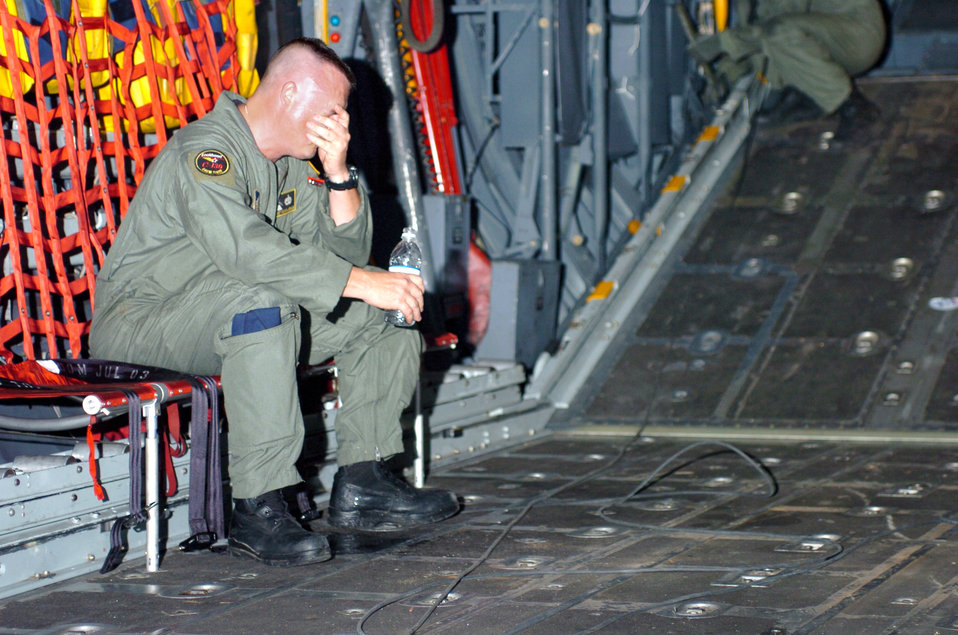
Deployed Airmen support Operation Unified Assistance

LANGKAWI, Malaysia -- Tech. Sgt. David Bragg wipes sweat off his face after delivering heavy equipment that will be used to provide humanitarian aid in support of Operation Unified Assistance. More than 13,000 Marines, Sailors, Airmen, Soldiers and Coast Guardsmen with Combined Support Force 536 are working with international militaries and non-governmental organizations to aid the affected people of Thailand, Sri Lanka and Indonesia after a magnitude 9.0 earthquake Dec. 26 triggered devastating tsunamis. Many nations including Thailand, Sri Lanka, Indonesia, Japan, Malaysia, Australia and the United Kingdom have joined the U.S. here to support Operation Unified Assistance.